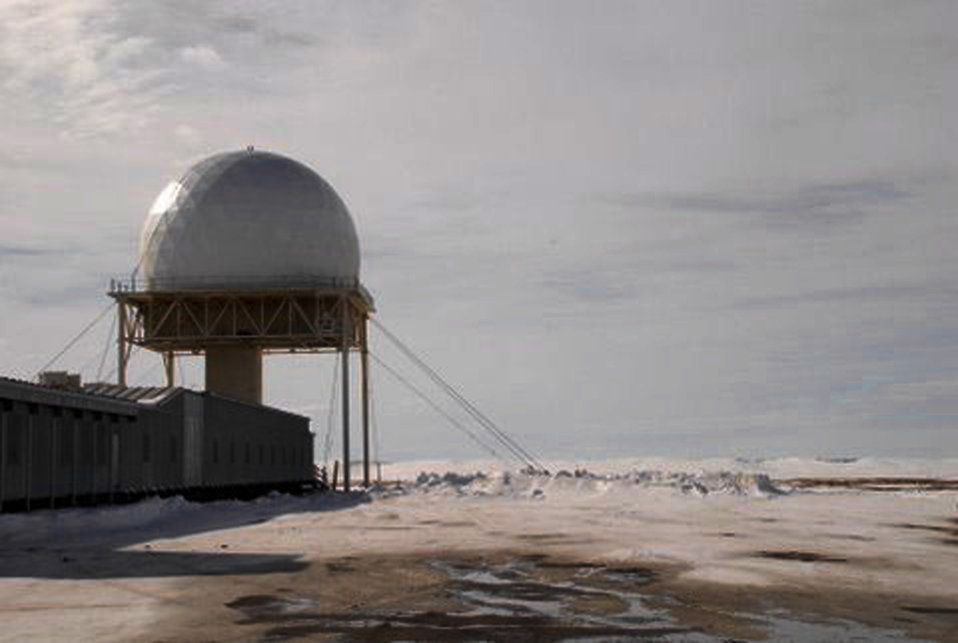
Inside the dome: Barter Island radar site opens its doors

The Barter Island Radar Site is located adjacent to the village of Kaktovik, Alaska, on the shores of the Beaufort Sea. The facility is part of the North Warning System, the sucessor to the old Distant Early Warning line.